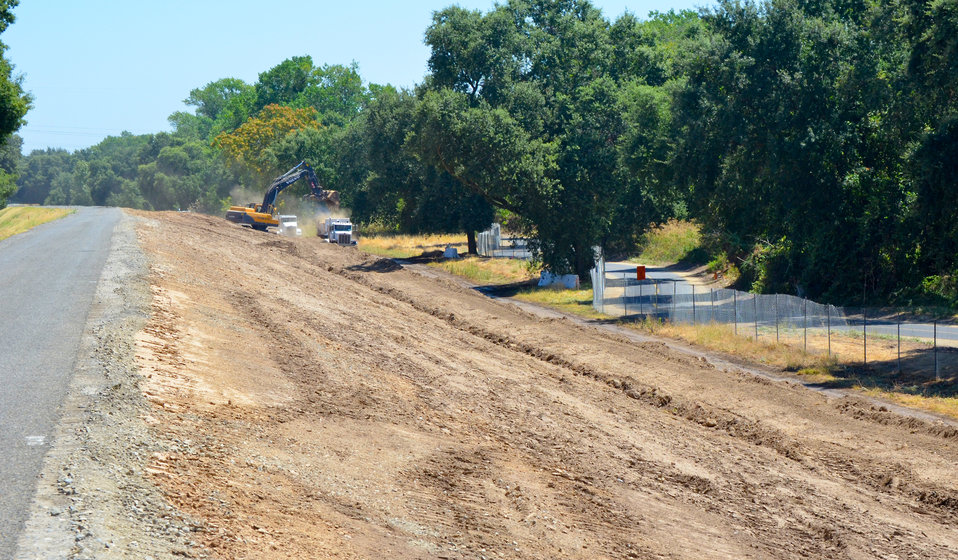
Multi-use trail open, levee path closed during construction

Contractors for the U.S. Army Corps of Engineers Sacramento District haul away levee material Aug. 2, 2012, during the Howe Avenue levee raise project’s early stages. The top of the levee is closed to the public but fencing surrounds the project area, keeping the 33-mile multi-use trail (right) open to the public. After scheduled completion this October, the project will further reduce area flood risk by raising and reinforcing more than 4,000 feet of levee along the American River in Sacramento, Calif.